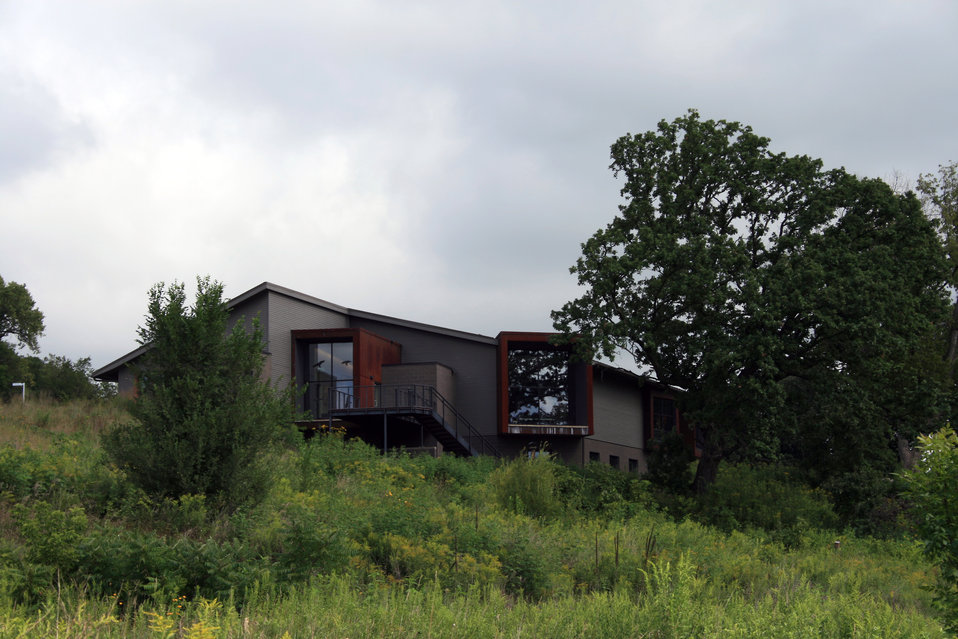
Rapids Lake Education Center

Rapids Lake Education and Visitor Center is home to hands-on learning for schools and families alike.